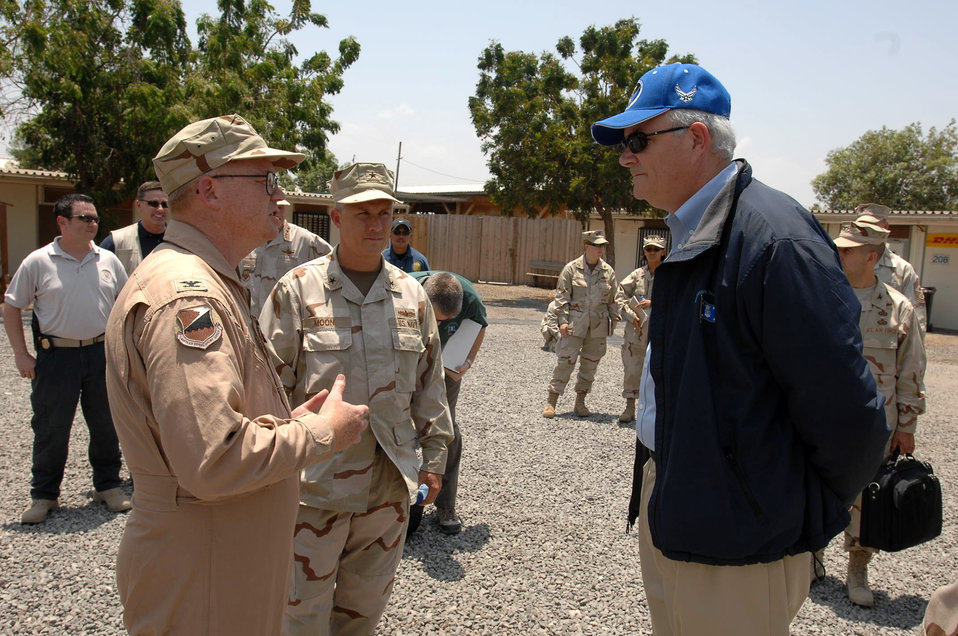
Secretary Wynne visits Airmen in Djibouti

Col. Michael McMillie shows Secretary of the Air Force Michael W. Wynne around Camp Lemonier, Djibouti, March 29. Secretary Wynne made a visit to Camp Lemonier to see how Airmen are supporting the Combined Joint Task Force-Horn of Africa mission. Colonel McMillie is the Air Component Coordinator Element/Horn of Africa director and the 449th Air Expeditionary Group commander.